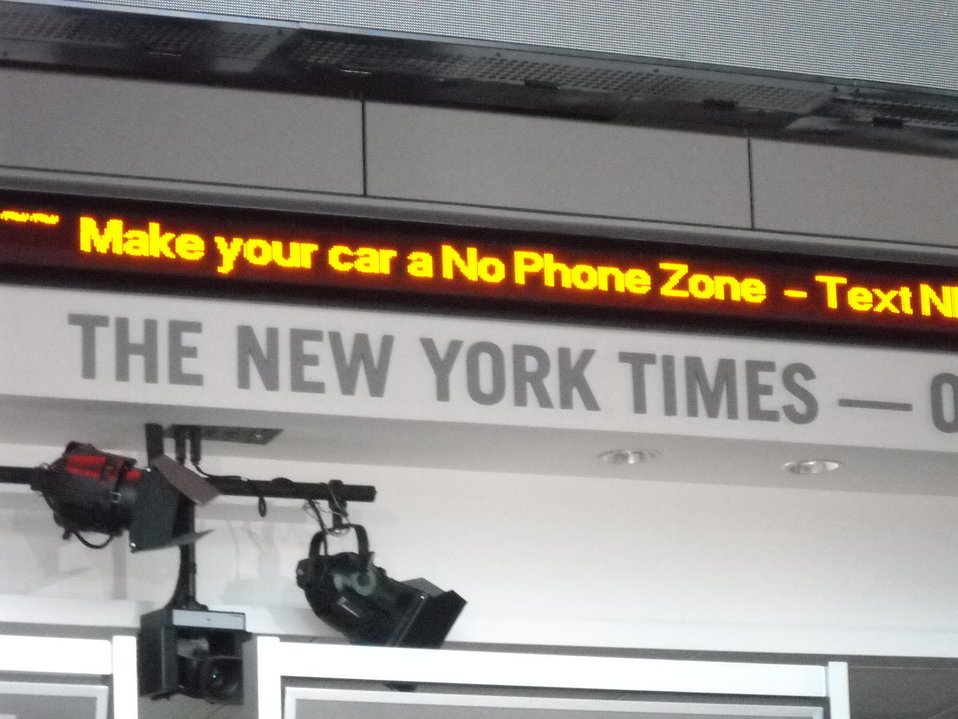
National No Phone Zone Day Newsum Washington, DC April 30, 2010 012